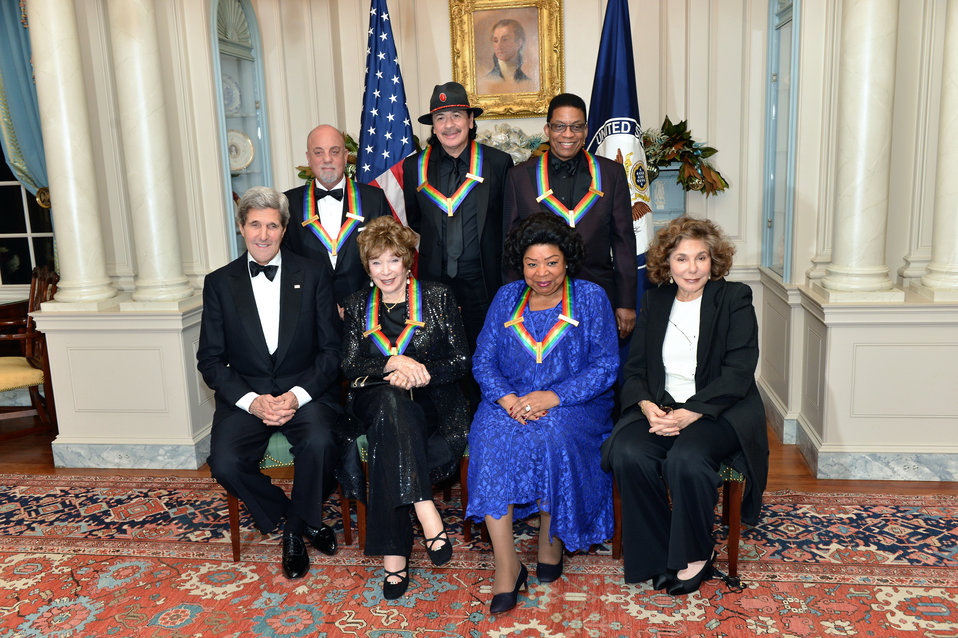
Secretary Kerry and Mrs. Heinz Kerry Meet With the Kennedy Center Honor Award Recipients

U.S. Secretary of State John Kerry and Mrs. Teresa Heinz Kerry pose for a photo with the 2013 Kennedy Center honorees -- Shirley MacLain, Martina Arroyo, Billy Joel, Carlos Santana, and Herbie Hancock at the U.S. Department of State in Washington, D.C., on December 7, 2013.